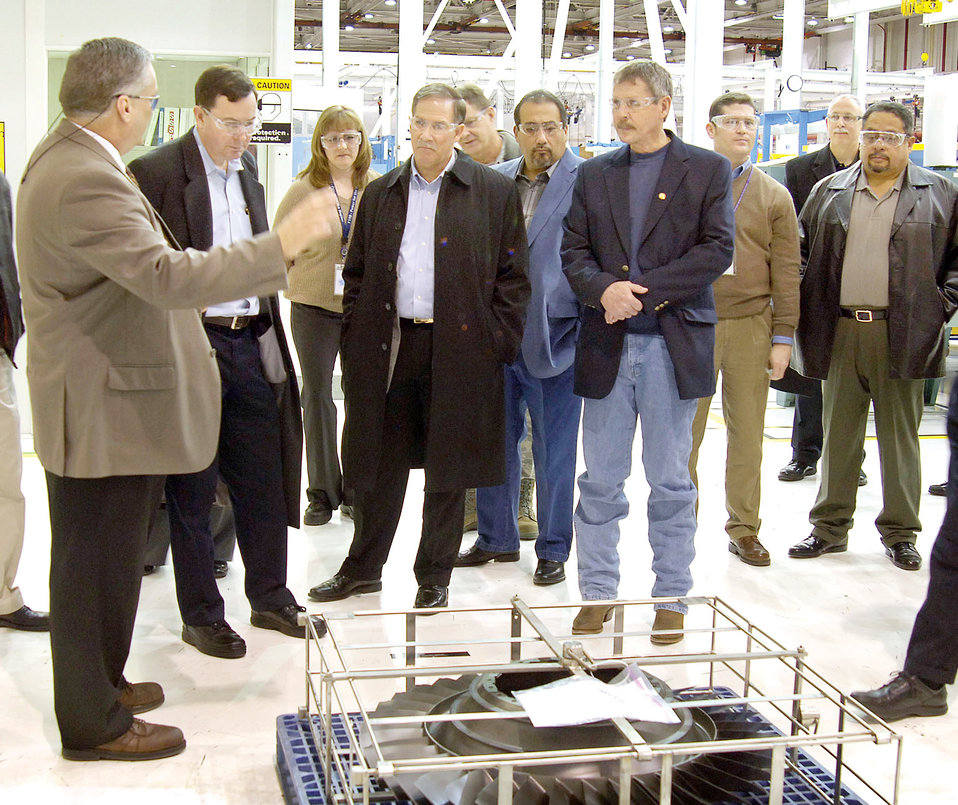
AFMC leader visits Tinker

Jimmie Green of Tinker's 544th Propulsion Maintenance Squadron (left) takes leaders from Air Force Materiel Command's unions and civil service through a work area Feb. 22 through 24 at Tinker AFB, Okla. The group converged for an American Federation of Government Employees Partnership Council meeting and updates on Tinker's production work.